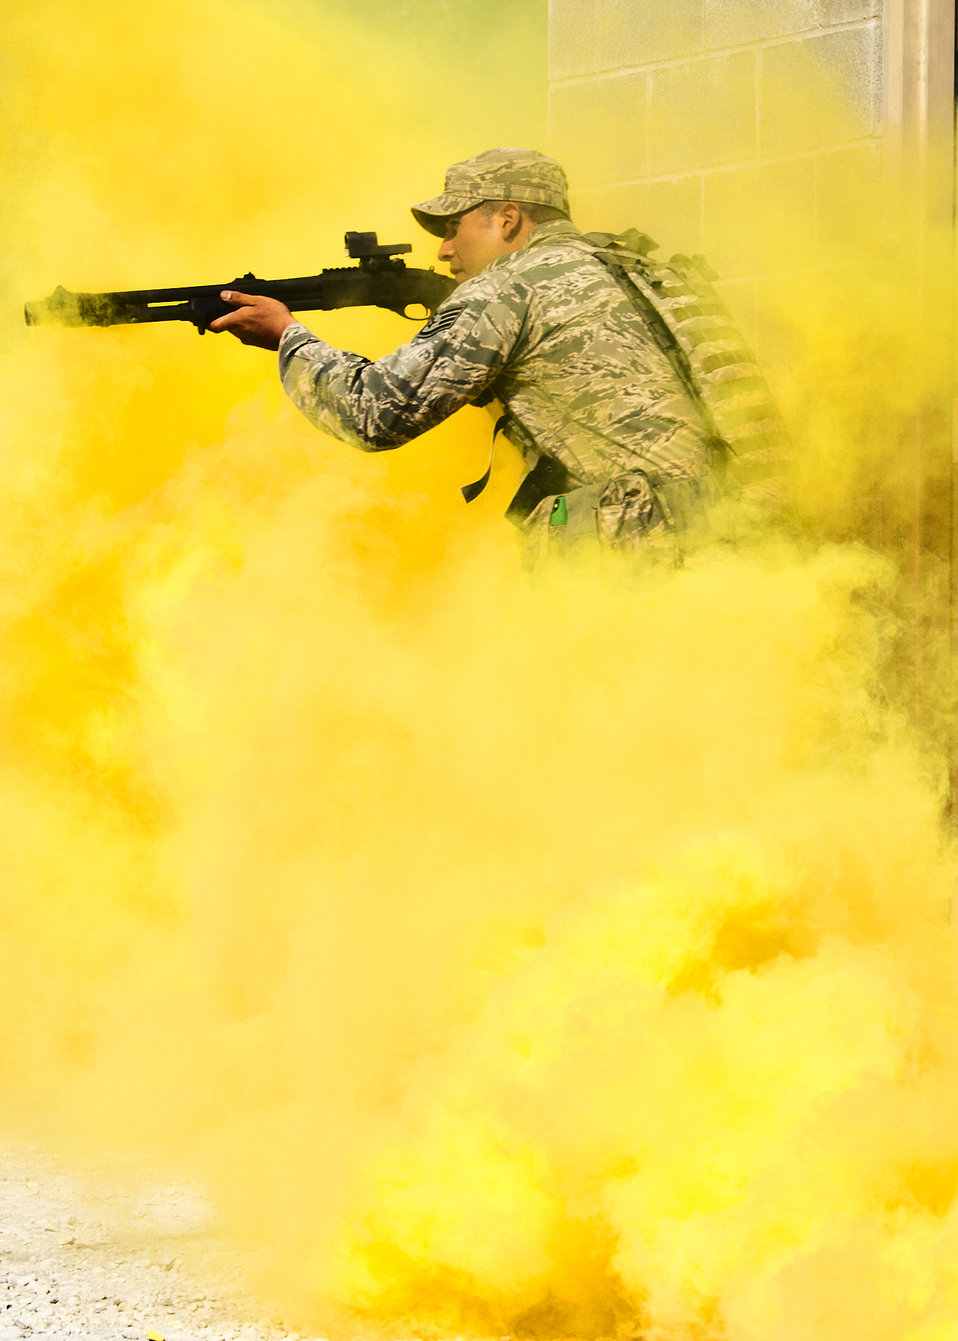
Brave Defender

Staff Sgt. Geovanii Pacheco leads his team out of a building as part of an assault demonstration for Chief Master Sgt. of the Air Force James A. Roy, May 6, 2011, at Eglin Air Force Base, Fla. Chief Roy received a hands-on tour of Air Force Materiel Command's